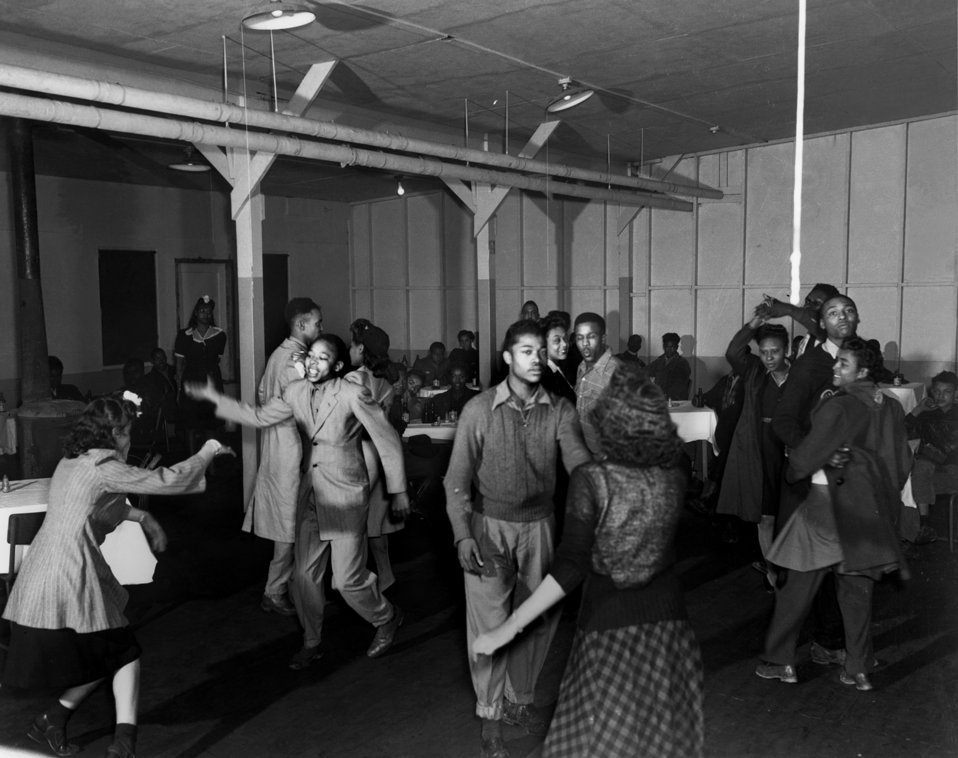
Teen Dance Oak Ridge

1310-9 DOE photo by Ed Westcott Teen Dance Oak Ridge Tennessee 1945